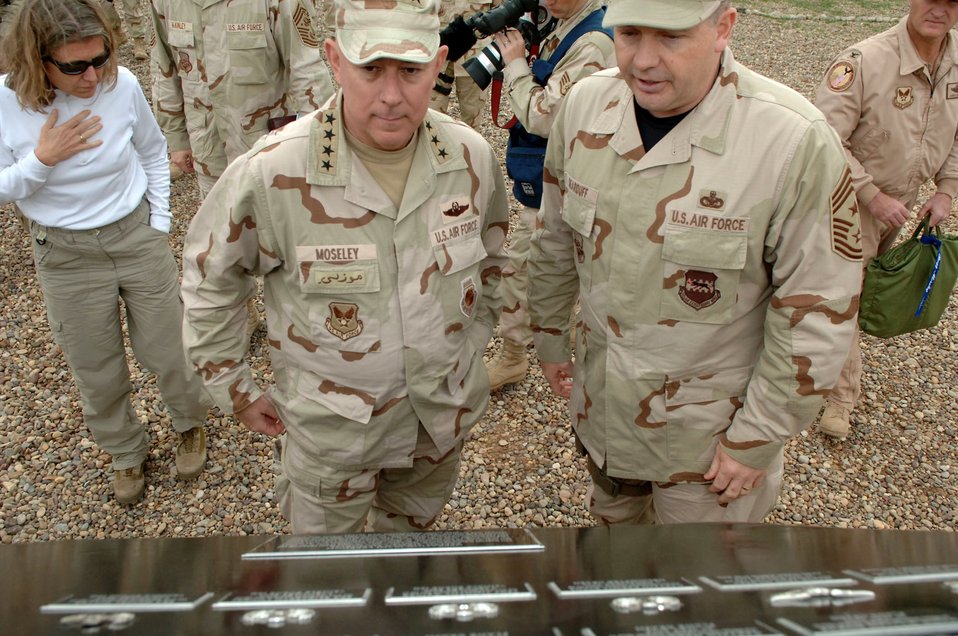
Chief of staff visits Air Force's combat airpower hub

Air Force Chief of Staff Gen. T. Michael Moseley and Chief Master Sgt. Scott Dearduff pay their respects at the Fallen Airmen Memorial Feb. 4 at Balad Air Base, Iraq. The memorial was dedicated Jan. 12. Chief Dearduff is the 332nd Air Expeditionary Wing command chief master sergeant.